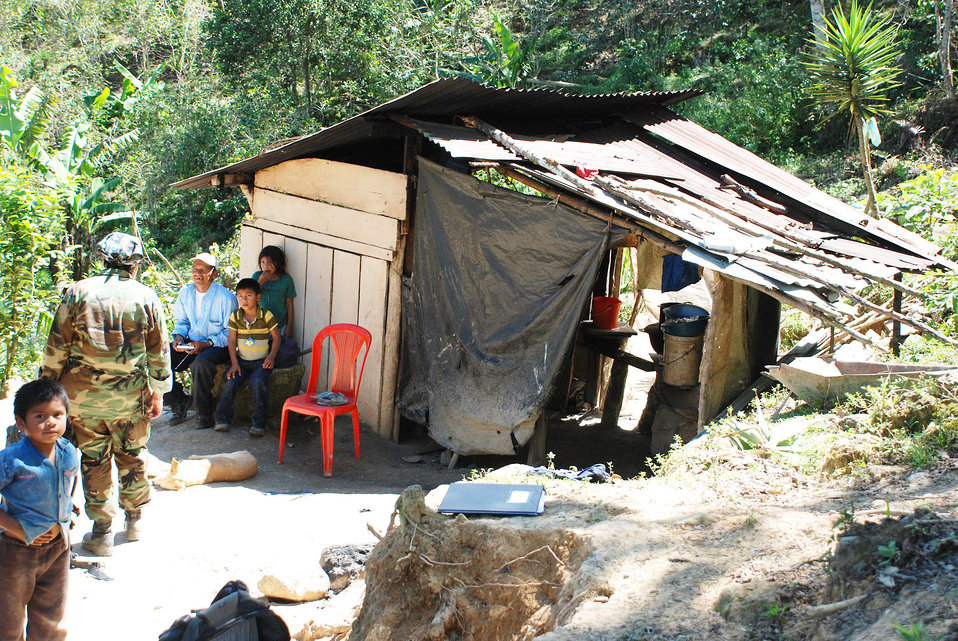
Medical team hikes into Honduran mountains to care for children

Members of the pediatric nutrition team participating in a U.S. medical readiness training exercise visit the home of a family of eight in the remote village of Marcala, Honduras. Many local residents in the mountains live without electric power or indoor plumbing, and do not have routine access to medical care.